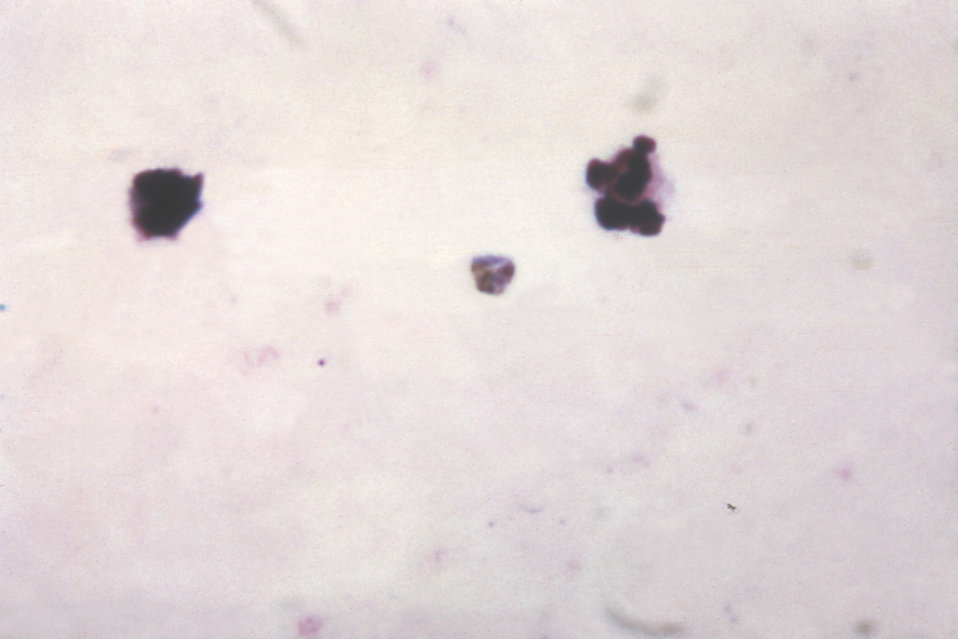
This thick film specimen reveals an old growing P. malariae trophozoite displaying good, clean chromatin.